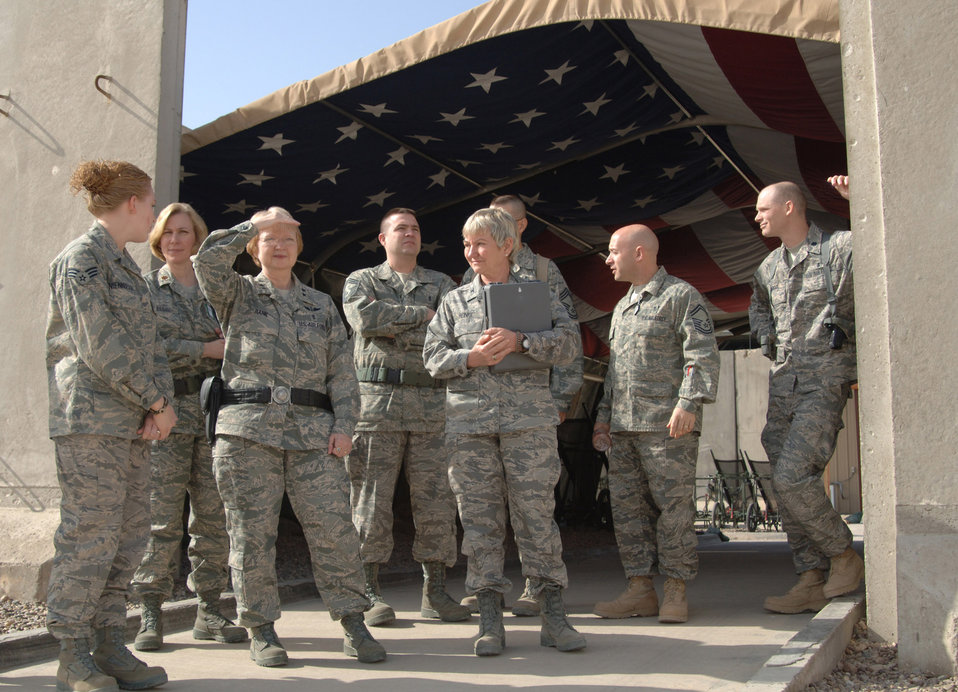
Assistant surgeon general visits Balad hospital

Maj. Gen. Melissa A. Rank (third from left) surveys the helicopter pad where sick and injured servicemembers are delivered to the Air Force Theater Hospital for treatment March 3 at Balad Air Base, Iraq. The general met with medics deployed to Balad AB March 3 to 4. General Rank is the assistant Air Force surgeon general for nursing services and medical force development.